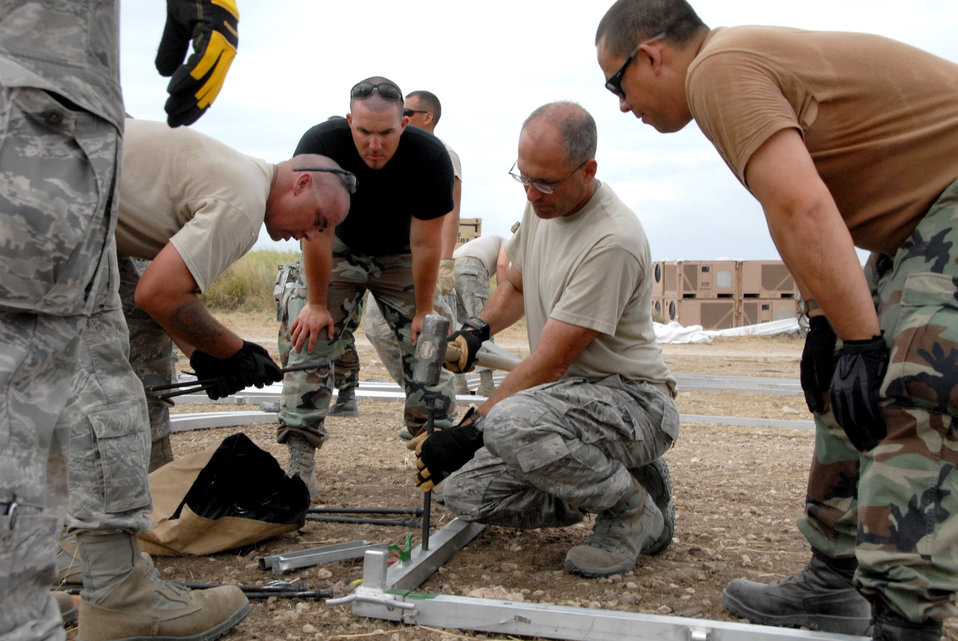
Kansas Air Guardsmen build EMEDS in Haiti

Lt. Col. Mark Green (center) demonstrates the proper technique for anchoring an Expeditionary Medical Support hospital Jan. 25, 2010, in Haiti. Colonel Green is the commander of the Kansas Air National Guard's 190th Civil Engineering Squadron.